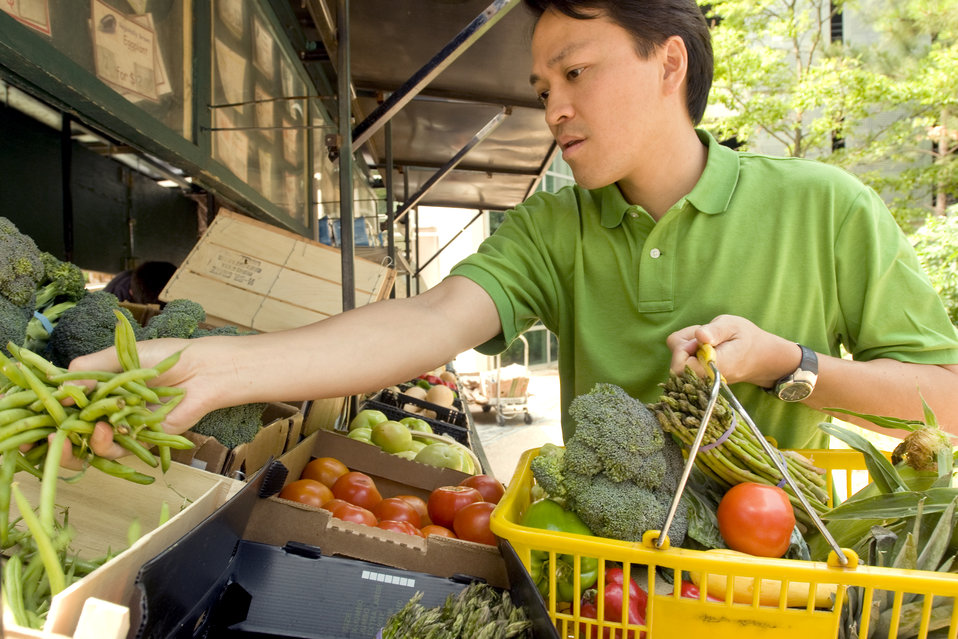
This photograph depicts a man shopping at a mobile produce market, making healthy food choices from an array of fresh fruits and vegetables. After having made his choices, he had placed his selections into a yellow plastic basket, which he carried by its handles in his left hand. In this particular view, he was inspecting a right hand full of green beans, which he was looking to add to his selections.